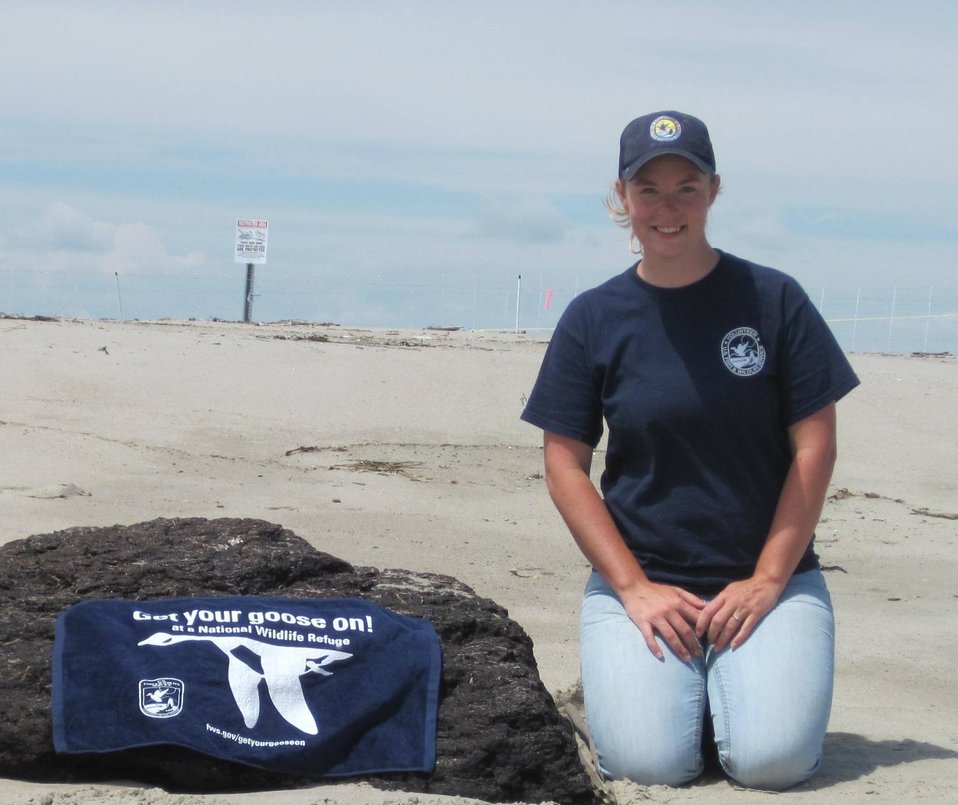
Bri Rudinsky at Rachel Carson National Wildlife Refuge

U.S. Fish and Wildlife Service